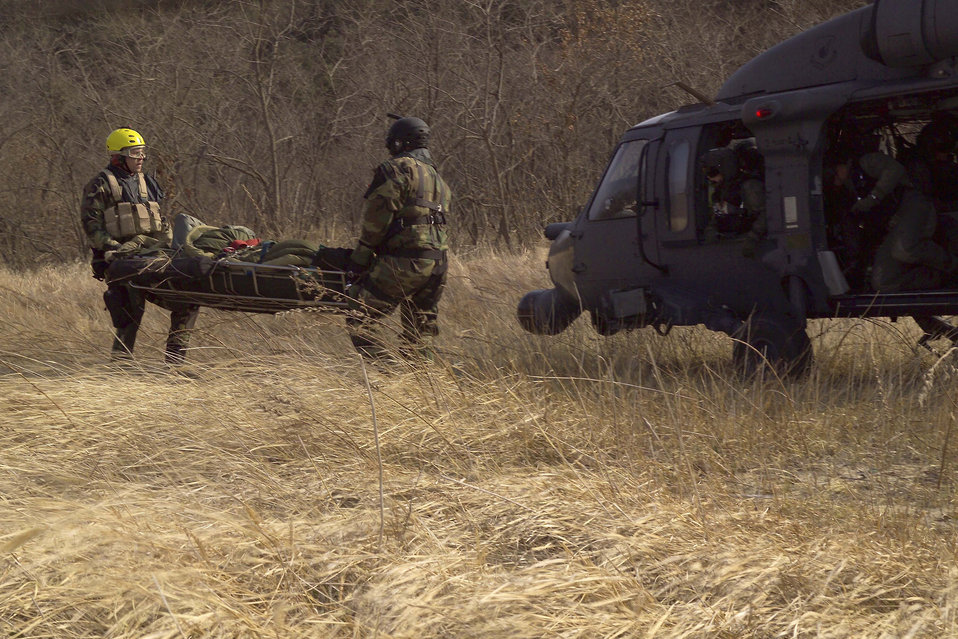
To the rescue

OSAN AIR BASE, South Korea -- Tech. Sgt. Michael Darin, left, and Staff Sgt. Mark Molnar load 1st. Lt. Mac McGilvray onto an HH-60G Pave Hawk helicopter during a part of exercise Beverly Bearcat 05-03 here recently. All three Airmen are pararescuemen with the 51st Fighter Wing.